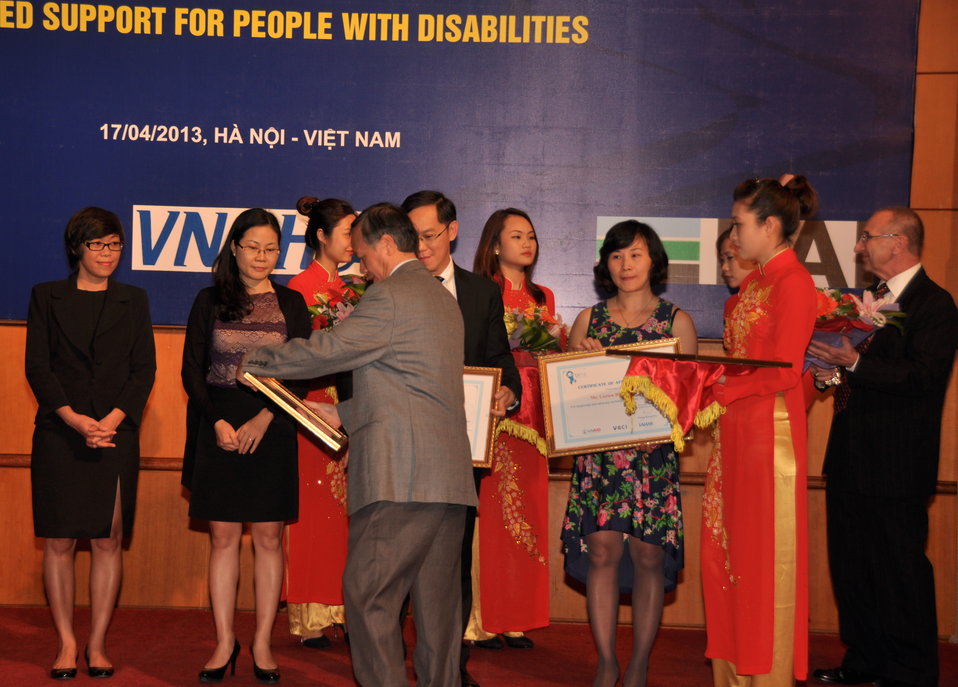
DSBlue Ribbon Employer Council Awards for Hiring Vietnamese with Disabilities C 1143

Hanoi, April 17, 2013